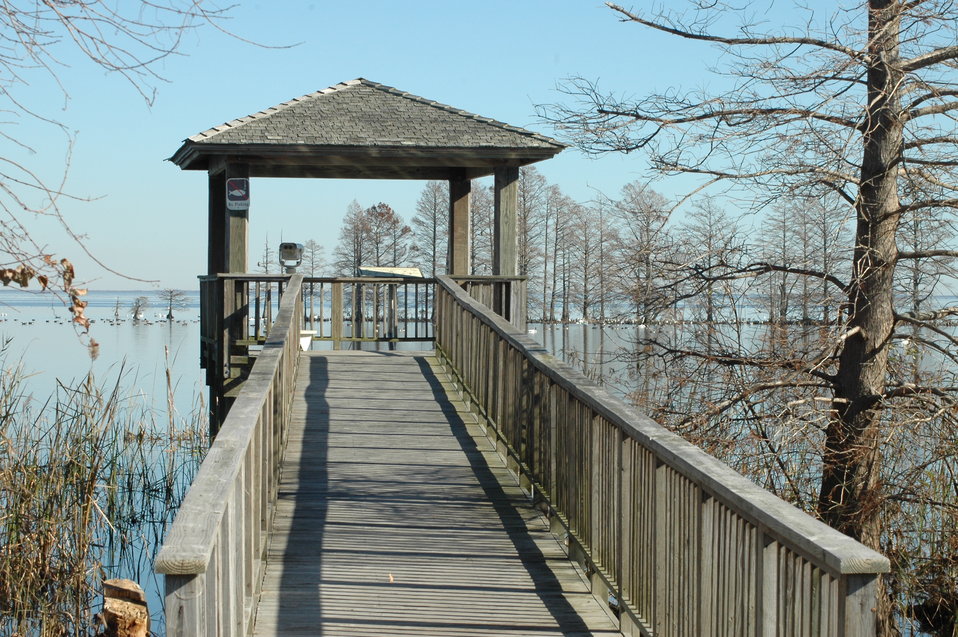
Dock

At Mattamuskeet National Wildlife Refuge.